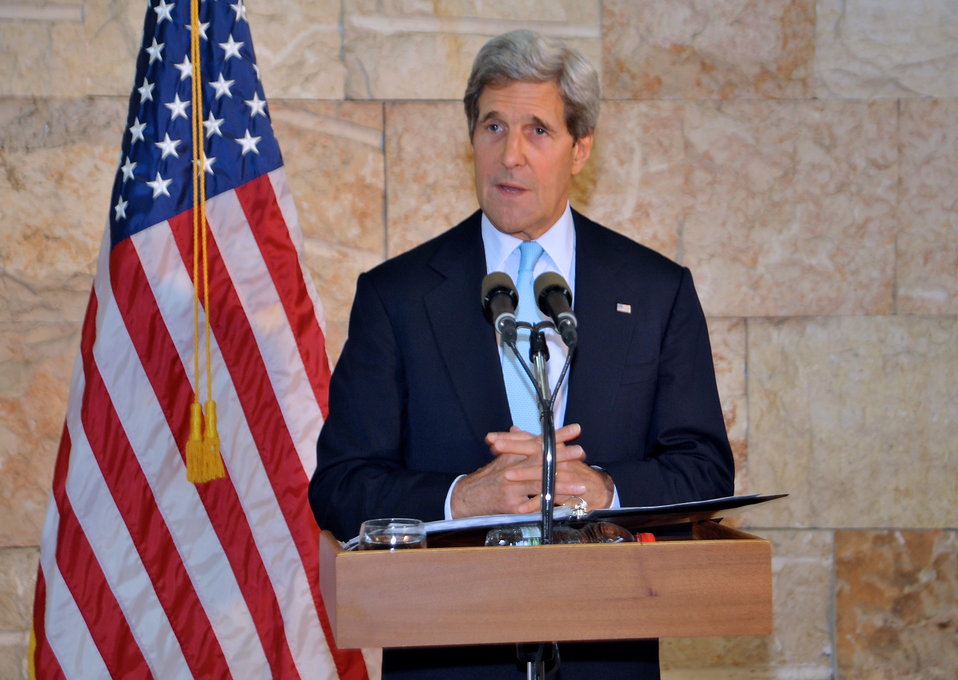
Secretary Kerry Addresses Reporters in Tel Aviv

U.S. Secretary of State John Kerry addresses reporters during a news conference in Tel Aviv, Israel, on June 30, 2013.